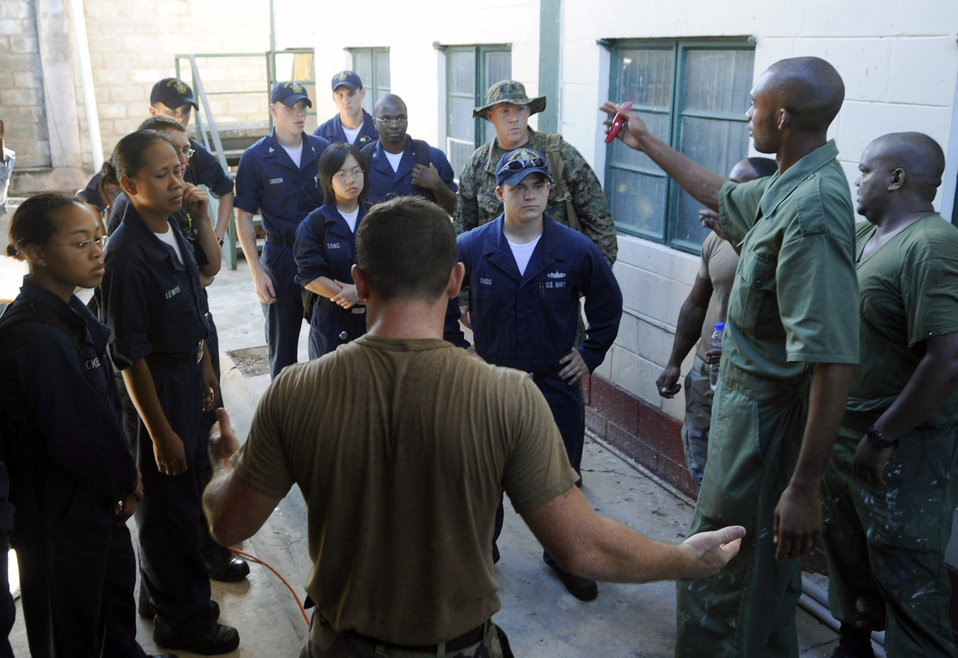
American servicemembers continue to provide promise

Airmen, Sailors and Trinidad and Tobago engineers rally together to repair and improve the St. Jude school in support of Operation Continuing Promise 2008 Nov. 4 in Port of Spain, Trinidad and Tobago.